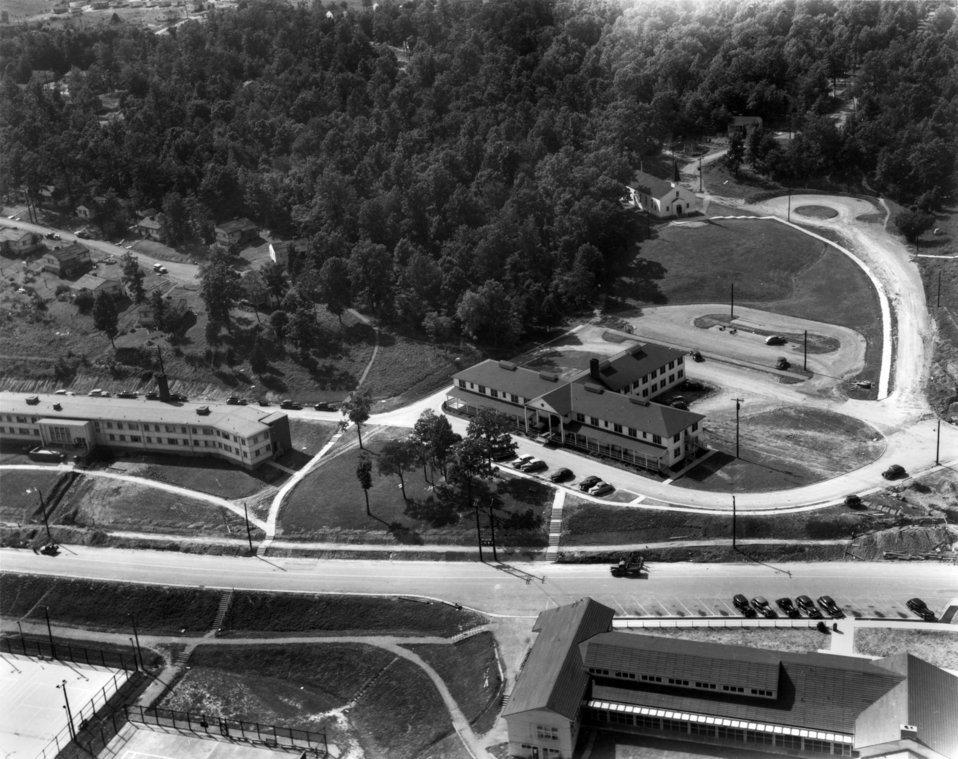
Guest House, Library and Chapel On The Hill Oak Ridge

5330 DOE photo by Ed Westcott